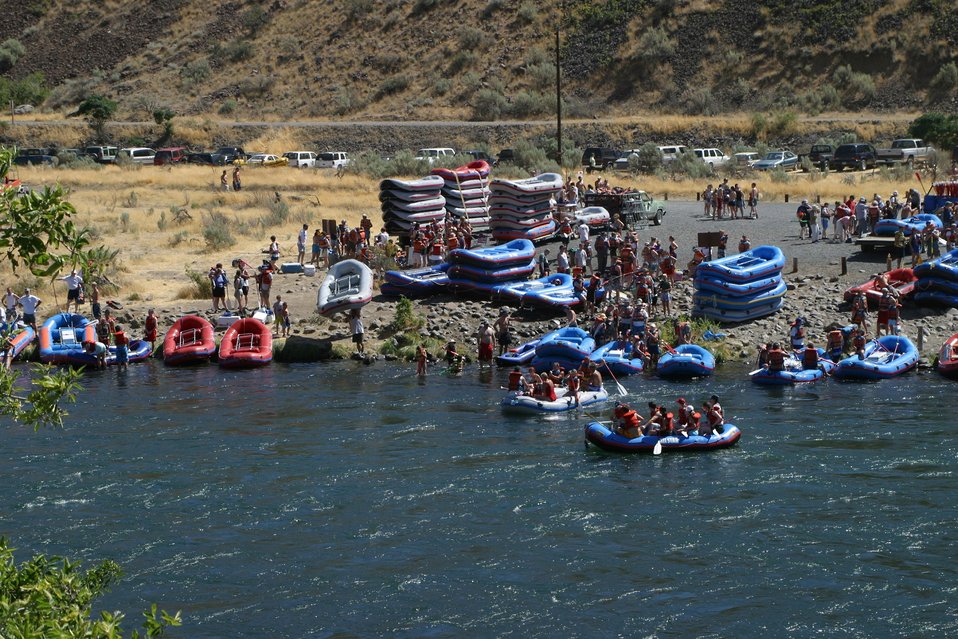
Over 200,000 people a year float the Lower Deshutes River.